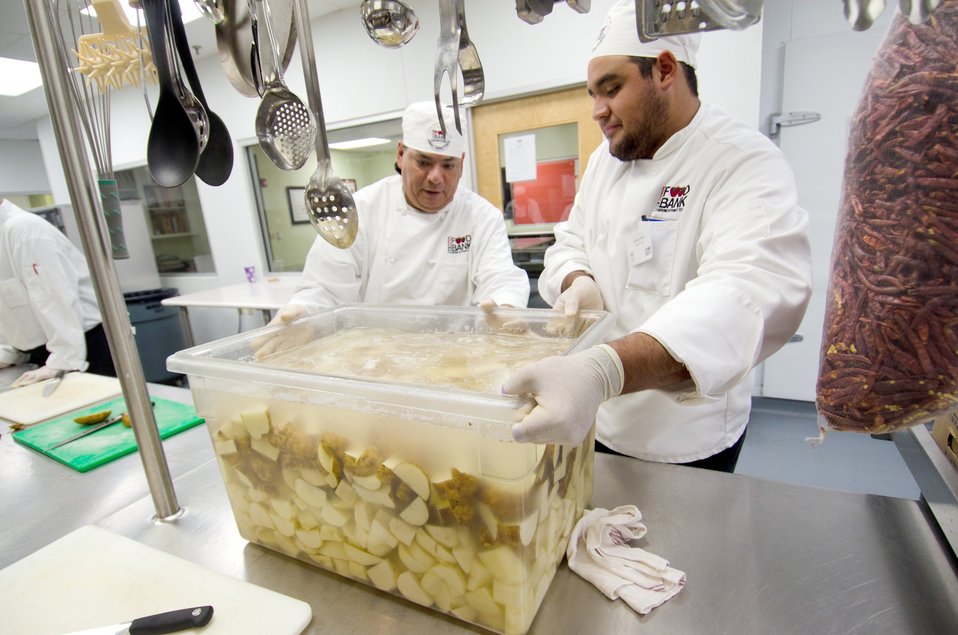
San Antonio Food Bank (SAFB) Community Kitchen students Sergio Baiz (right) and Ed Rivas (left) lift a tub of sliced potatoes that will be cooked and mashed for Kids Cafe meals being prepared by Community Kitchen Class 35, in San Antonio, TX, on Monday, October 31, 2011. Other meals prepared by the Community Kitchen include the U.S. Department of Agriculture (USDA) Summer Food Service Program for children during summer months, and the year-round Child and Adult Care Feeding Program (CACFP). Because they cater to mostly Hispanic communities and tastes, the use of dried red chili peppers remain in close reach (far right). Their classroom is seen behind them. The Community Kitchen trains the unemployed, feeds the hungry, and generates public support and revenue through social enterprise. They began creating meals in 2003, with volunteers and the Community Kitchen students looking to further themselves in a promising culinary career. Over 16-week course individuals receive basic culinary training, similar to portions of an accredited culinary institution, to develop their culinary job skills. The program is lead by Chef Rudy Garza and his team of instructor chefs, present training and work demands that build useful job skills. The students focus their new talents on the preparation of meals for area shelters, kids cafes, summer feeding sites (www.summerfood.usda.gov/), and catering services. The San Antonio Food Bank is a non-profit organization that serves as a clearinghouse by receiving and storing truckloads of donated food, produce, and other grocery. SAFB distribute these items to over 500 service agencies that help people in need.
“We couldn’t do what we do without our partnership with USDA’” said President and CEO Eric Cooper. He continues, “We are privileged in partnering (with the USDA) to feeding kids, through the summer, with the Summer Food Service Program, and throughout the year, with the Child and Adult Care Feeding Program (CACFP). Then in our approach to feeding seniors, we partner with USDA in the Commodities Supplemental Food Program (CSFP), and the Senior Farmer’s Market (Nutrition) Program. And then work to bring all our (needy) parties together with our Supplemental Nutrition Assistance Program (SNAP) Outreach. You know, once families have access to food we believe it is important to educate them. Through the support of the SNAP-Education Program we are able to educate them during their time of need. With this comprehensive approach we are really able to get the right food, at the right amount, at the right time, to needy families throughout our community – which allows us to feed the fifty-eight thousand we do, each week.”
SAFB serves 16 counties in Southwest Texas and states, “Nearly one out of every four children and one out of every five adults in Southwest Texas lives in poverty and has difficulty meeting basic nutritional needs.” According to SAFB, sixty-five percent of the people requesting emergency food have children. “Additionally, the senior citizens and those living on a fixed income generally have limited funds for a consistent grocery budget.”
San Antonio is the seventh largest city in the nation with surrounding farms and ranches near its rivers and water supplies. When available they provide fresh surplus produce. Other commodities come from the food industry and manufacturers. The major food brand companies that for various reasons have surplus commodities donate it to SAFB.
The United States Department of Agriculture donates commodities through programs such as The Emergency Food Assistance Program (TEFAP), while Texas farmers supply fresh produce to their Fresh Produce Program.
Public donations come in the form of money, food, volunteer time, and advocacy. Their fleet of trucks to pickup and deliver food as needed.